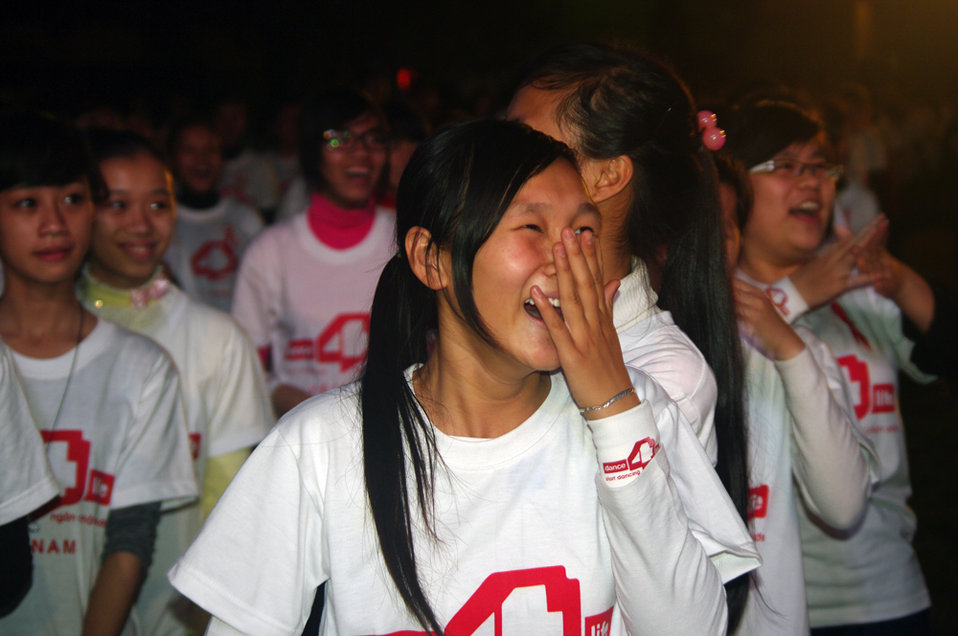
USAID supports dance4life to raise awareness of HIV and fight stigma in Vietnam

1,000 high school students participate in event.